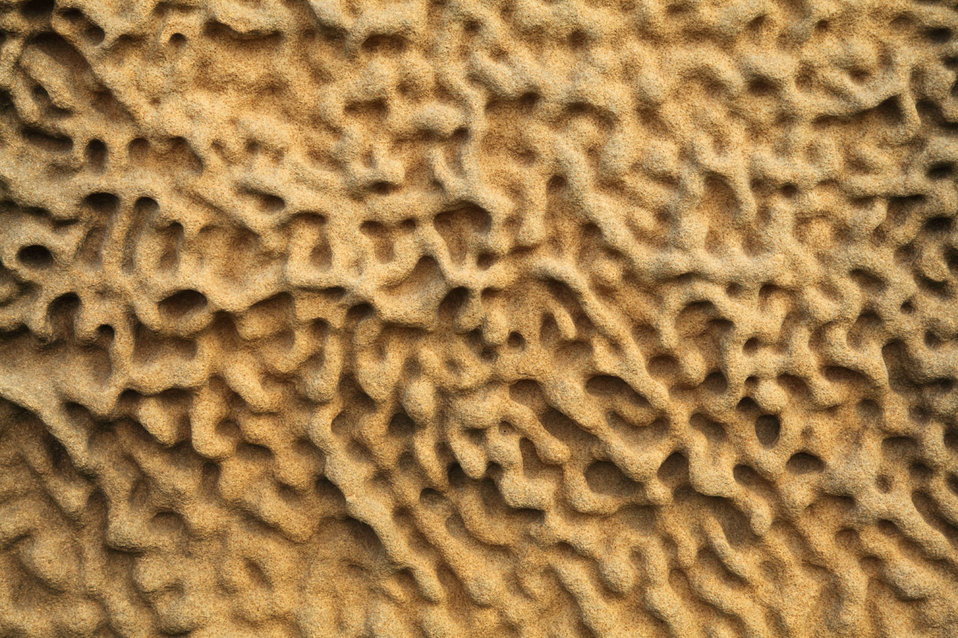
Sandstone erosion pattern cased by wind with sea water droplets.